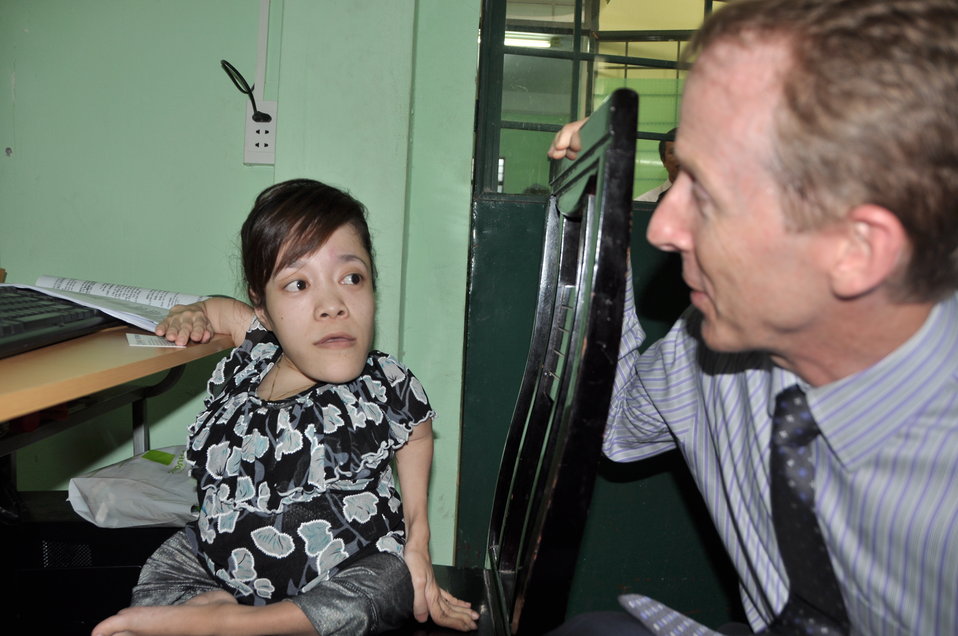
USAID Visits IT Training Program for People with Disabilities at Dong A University

Danang, Vietnam
July 17, 2013